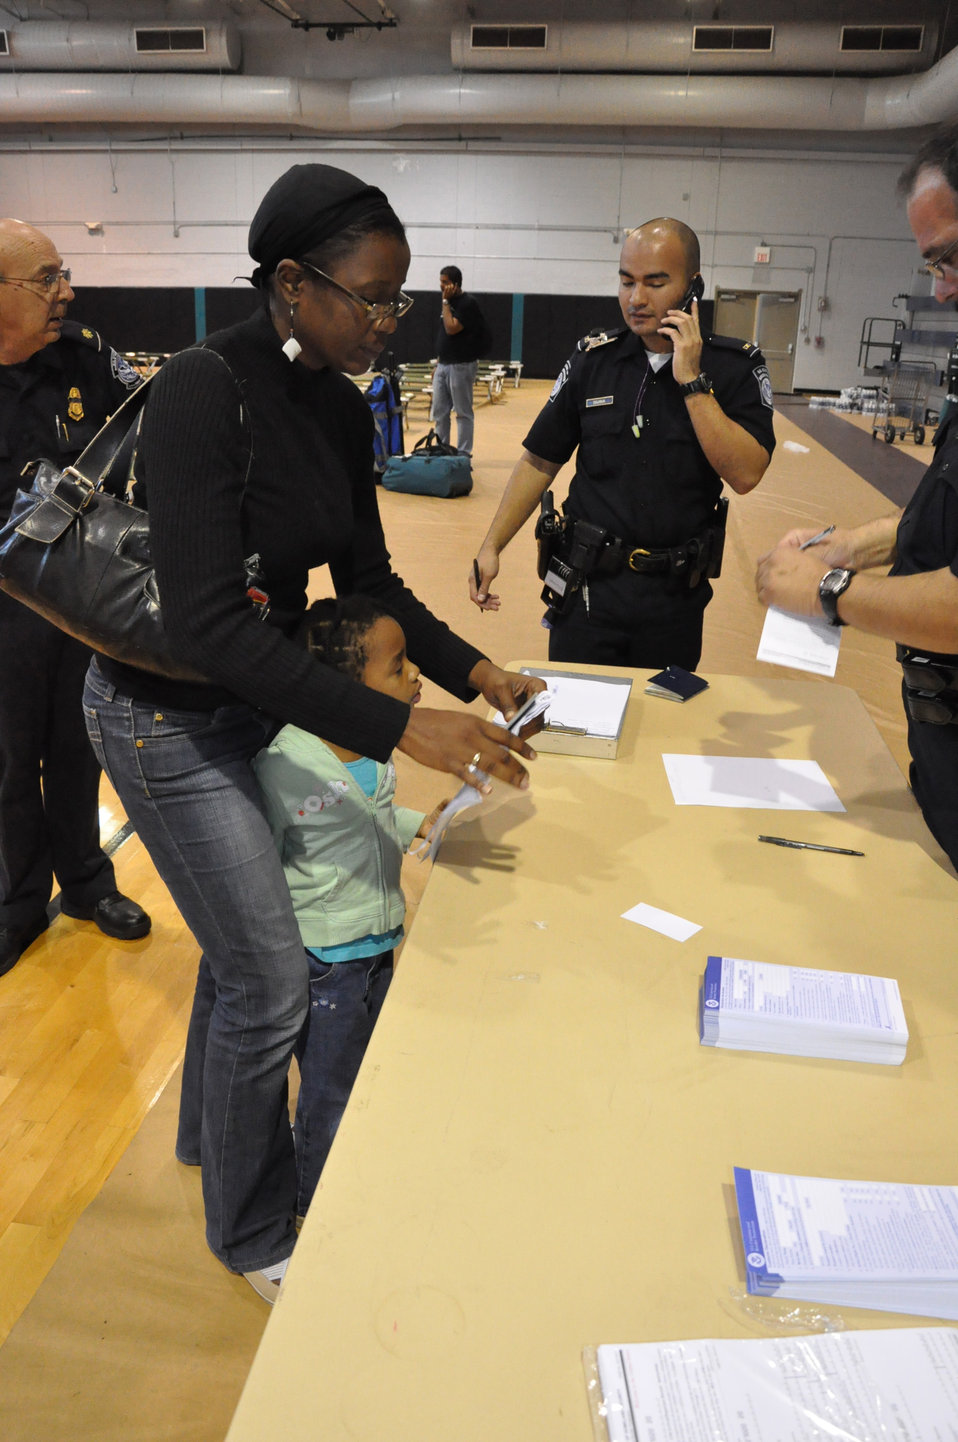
Homestead Air Reserve Base becomes hub for Haitian quake relief efforts

U.S. Customs and Border Patrol were on hand at the Homestead air Reserve Base to help process American citizens back to the United States from Haiti, Fri. Jan. 15, 2010. Citizens were checked through customs at the base gym.